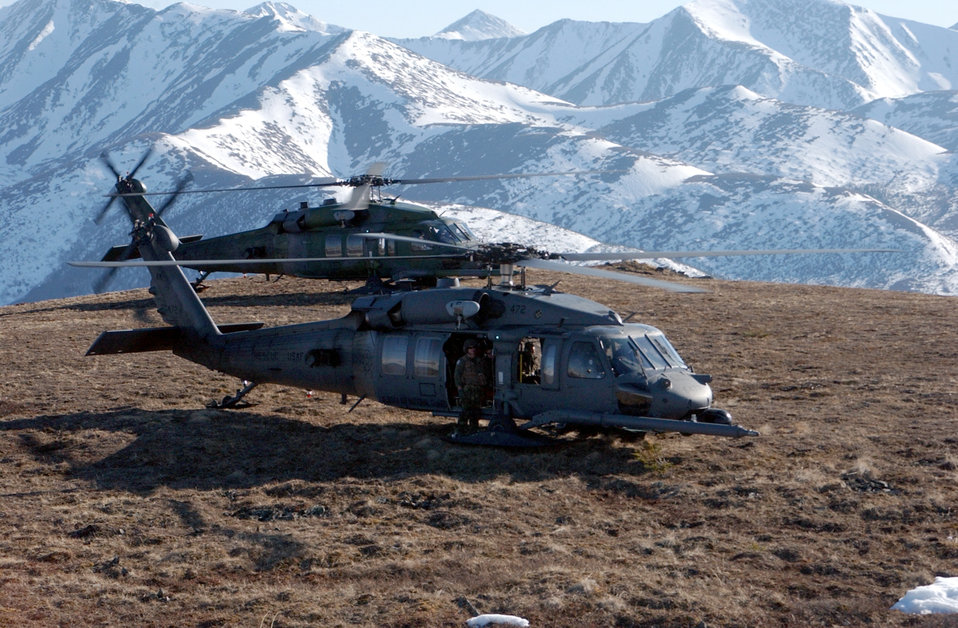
BRAC relocation

HH-60 helicopters, like these shown participating in an exercise at White Mountains, Alaska, are among the aircraft that will move when the Alaska Air National Guard's 176th Wing moves from Kulis Air National Guard Base to nearby Elmendorf Air Force Base in Anchorage, Alaska. The move and closure of Kulis is part of a 2005 Base Realignment and Closure Commission recommendation. No date has been set yet for the move.